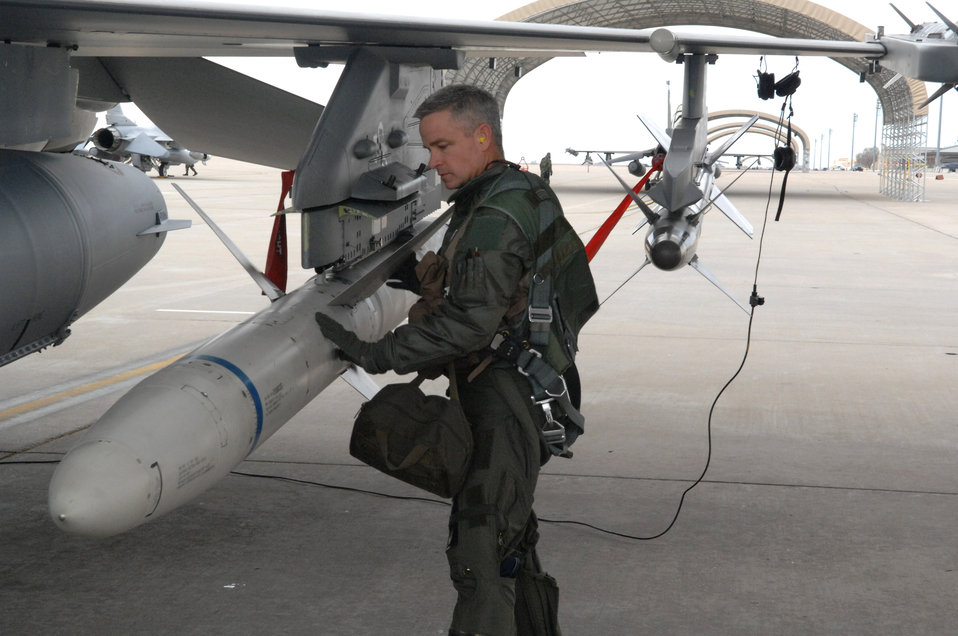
Preflight

Lt. Col. Tod Fingal performs a preflight inspection on his F-16 Fighting Falcon before takeoff Jan. 18 at Cannon Air Force Base, N.M.